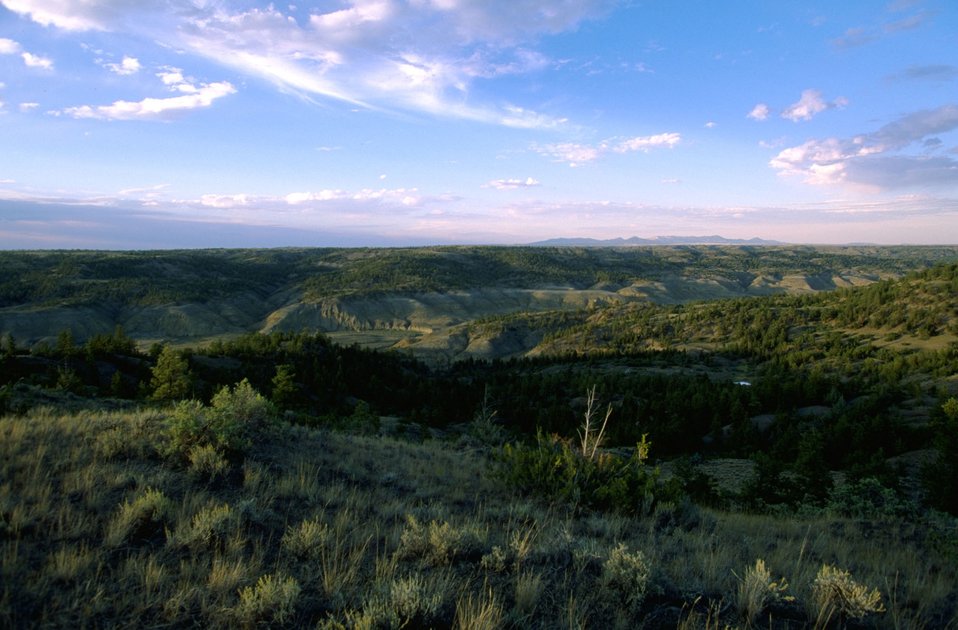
Missouri Breaks topography/scenery